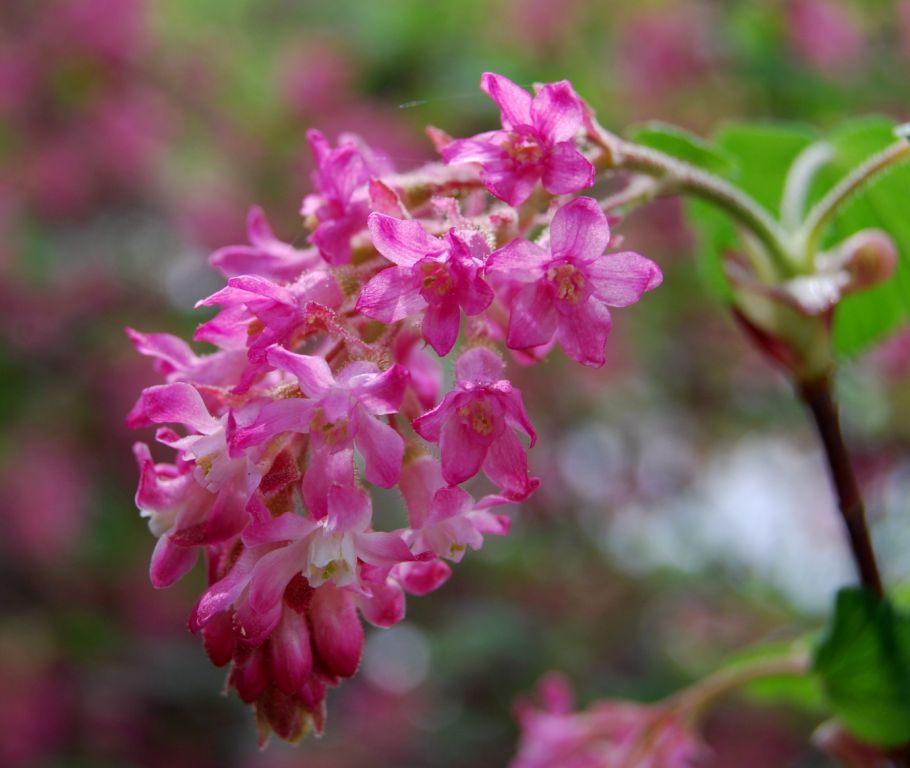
Uploaded by request of Danny Hayes

Photo taken in Monterey, California

We took a trip to Monterey, leaving mostly rain behind, to find sun, and all the spring flowers in bloom. I especially liked these pink cluster flowers.